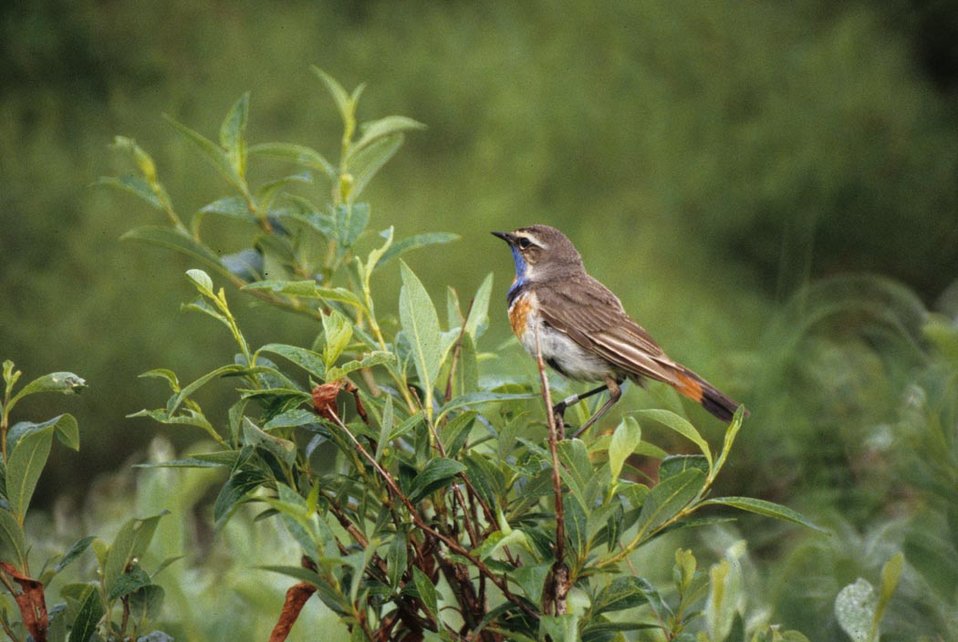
Bluethroat Male

The Bluethroat is one of the smallest members of the Thrush family measuring 5.5 (14 cm) inches in length. The colorful blue throat pattern distinguishes this breeding male from other species. Nests are found on the tundra in thickets near water. The Blue